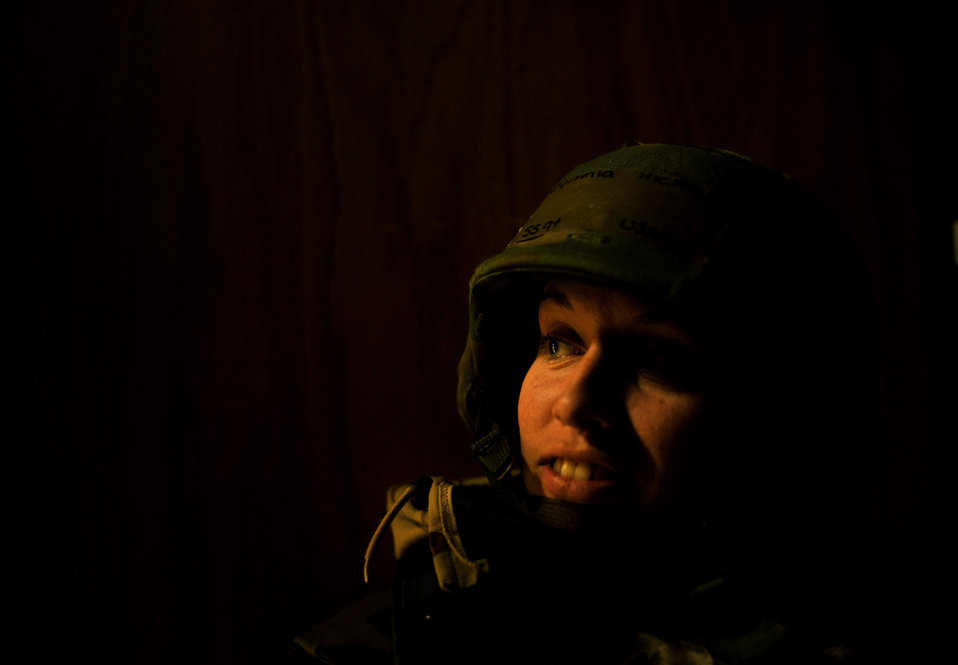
Ready for inspection

An Airman from the 437th Airlift Wing at Joint Base Charleston, S.C. responds to a training scenario during an operational readiness evaluation Oct. 27, 2011, in Gulfport, Miss. The ORE was intended to evaluate the wing members’ mission effectiveness.